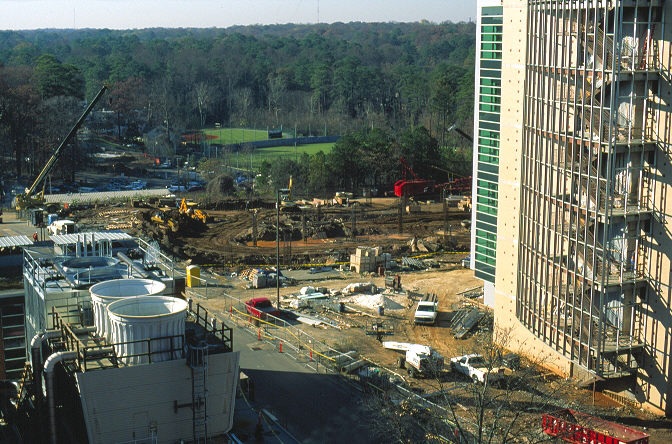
Construction site for south parking deck, CDC Roybal Campus.